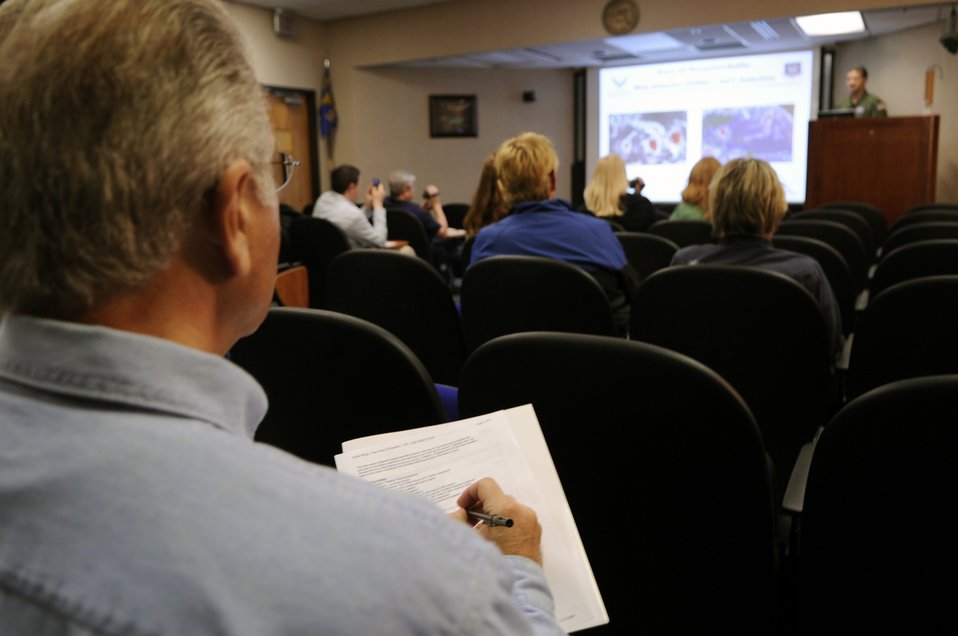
Bloggers Flight with the Hurricane Hunters

A first for the Air Force, military bloggers were invited to fly with the 53rd Weather Reconnaissance Squadron in a WC-130J